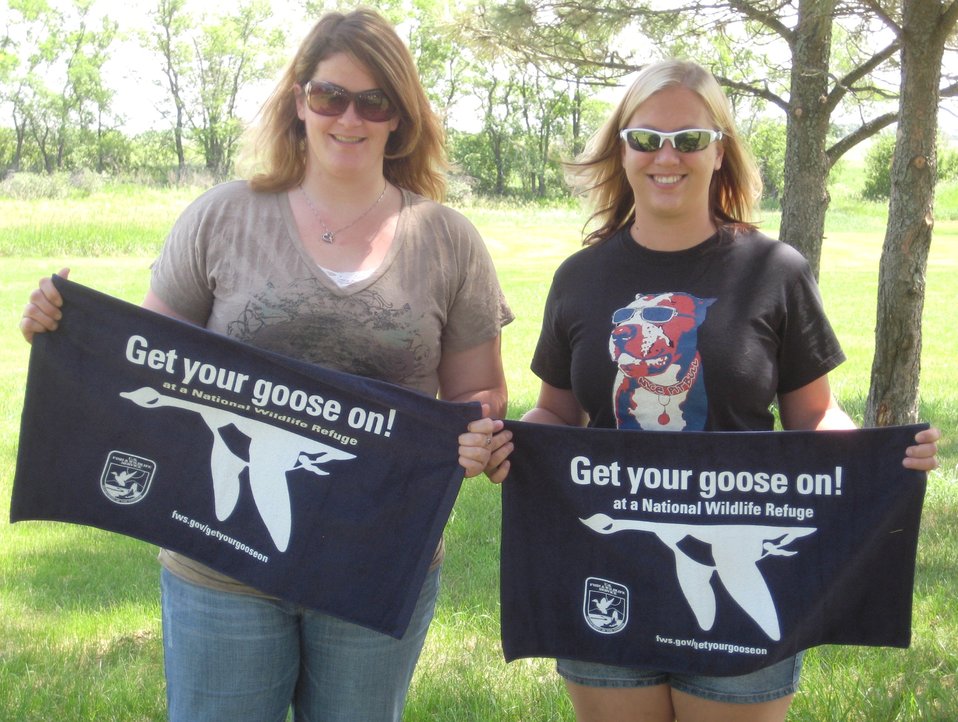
Get Your Goose On!

Taken at Tewaukon National Wildlife Refuge.